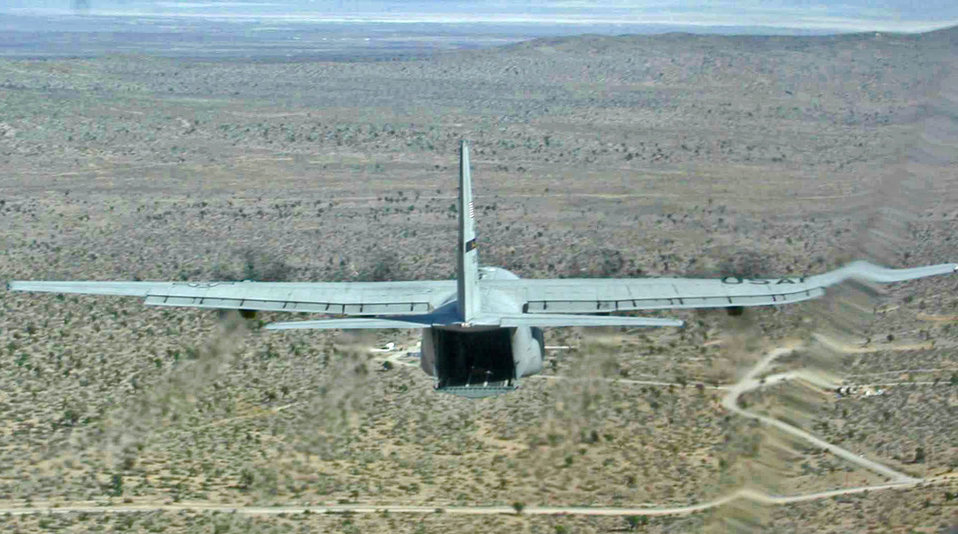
C-130J software upgrades get final adjustment

OVER EDWARDS AIR FORCE BASE, Calif. -- A C-130J Hercules aircrew recently tested an upgraded software program which will allow the cargo aircraft to carry heavier payloads.